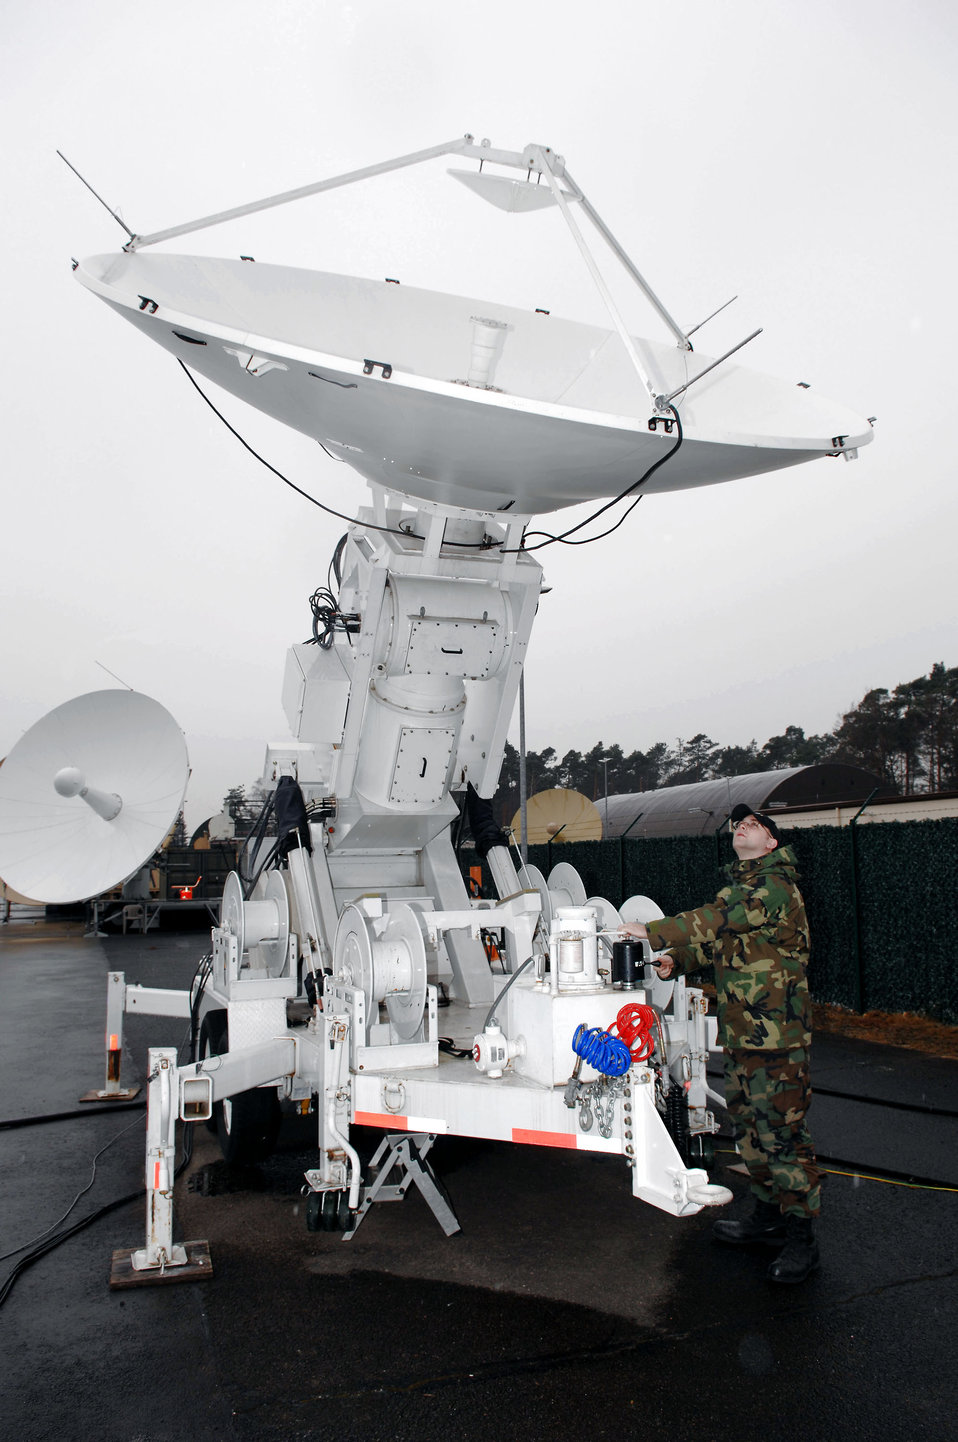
Ramstein team gives planners Eagle Vision

Senior Airman Adam Walters adjusts the angle of the Eagle Vision-1 antenna Feb. 29 at Ramstein Air Base, Germany. The EV-1 antenna is the team's primary source of communication with commercial satellites.